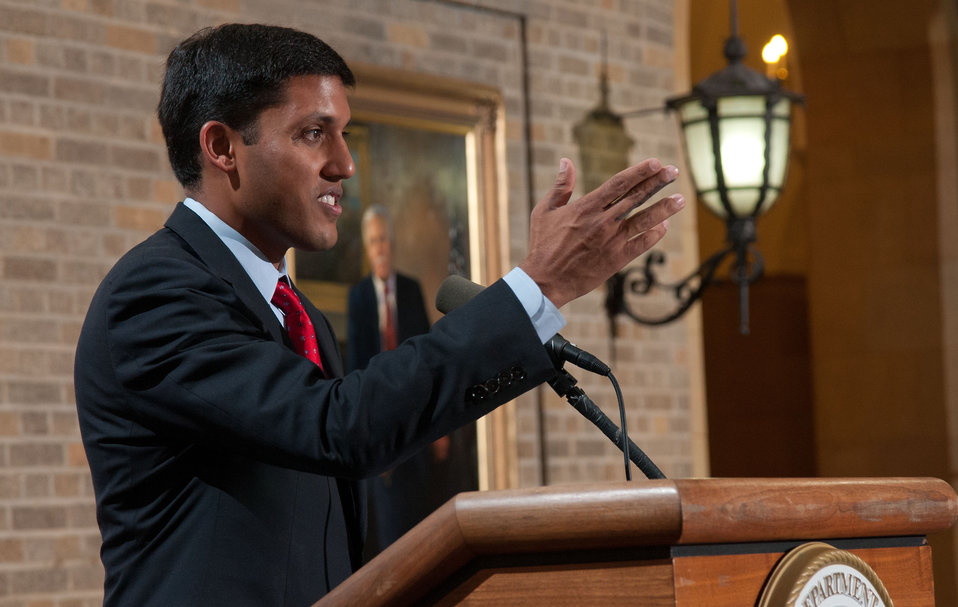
U.S. Agency for International Development (USAID) Administrator Dr. Rajiv Shah spoke at the Iftar event, co-sponsored by the Iftar celebration, co-sponsored by the U.S. Department of Agriculture, U.S. Agency for International Development (USAID) and Islamic Relief USA, on Tuesday, August 7, 2012, in the USDA Whitten Building, in Washington, D.C. Ramadan is the month of fasting, intensive prayer, sacrifice and worship for Muslims around the world. Throughout this month, Muslims fast during the day, abstaining from consuming food from dawn to dusk and using this time to purify spiritually. Fasting reminds Muslims of the poverty and hunger suffered by many in the United States and worldwide. It is a connection with those who are hungry not through devotion, but through the many global factors that lead to hunger and famine. Iftar is the meal at which Muslims break their fast at sunset, usually by eating dates, according to the Prophetic tradition.